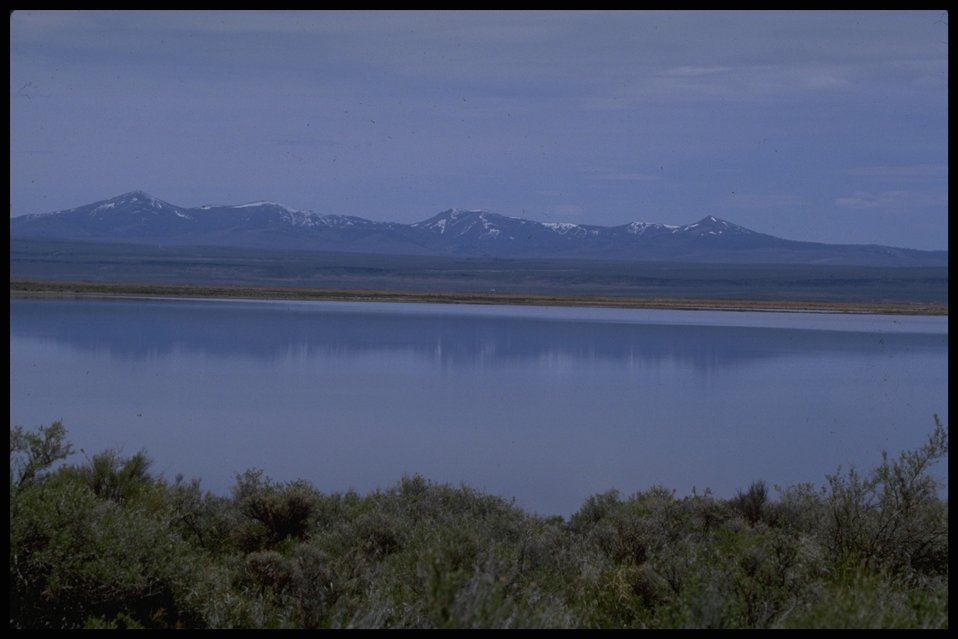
Warner Wet Lands, Lakeview District.